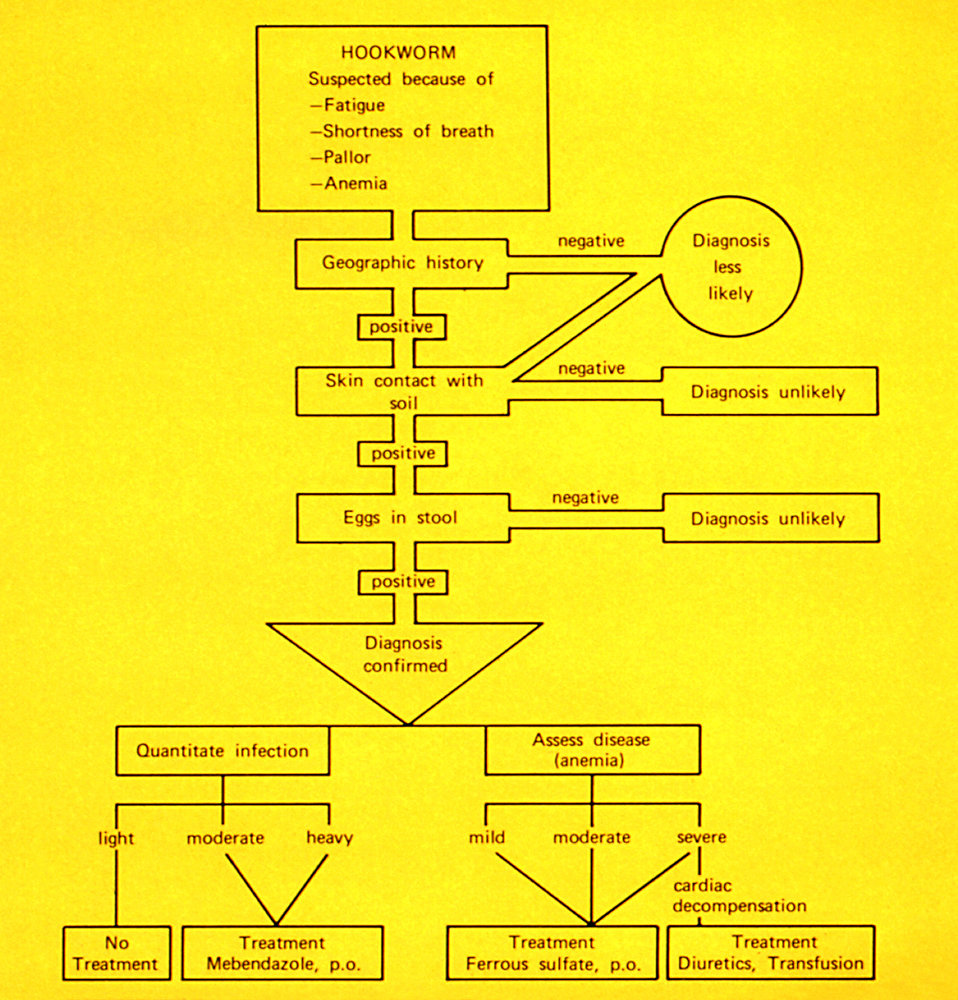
This diagram represents the diagnostic algorithm which is implemented when diagnosing hookworm infections.